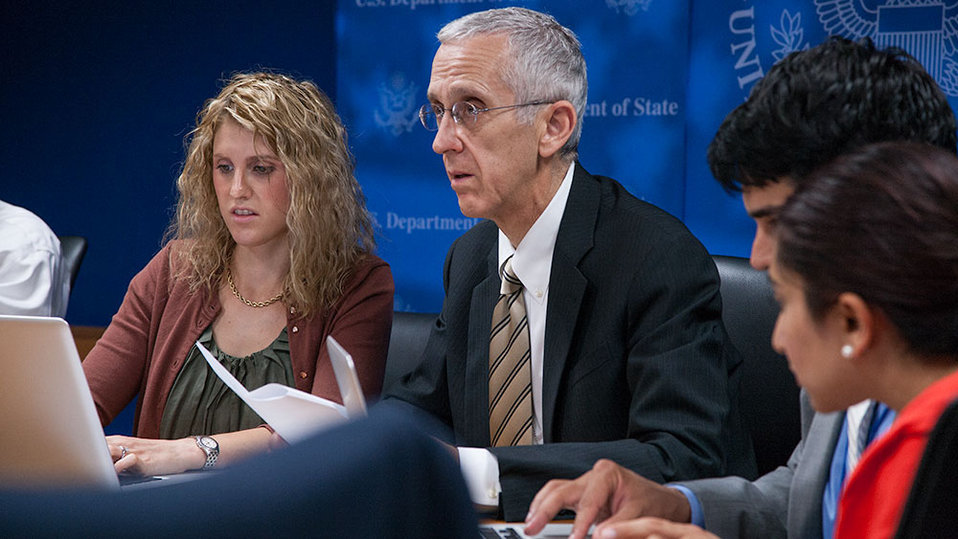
Special Envoy Stern Participates in a Facebook Chat

Special Envoy for Climate Change Todd Stern participates in a Facebook chat on climate change on June 28, 2013.